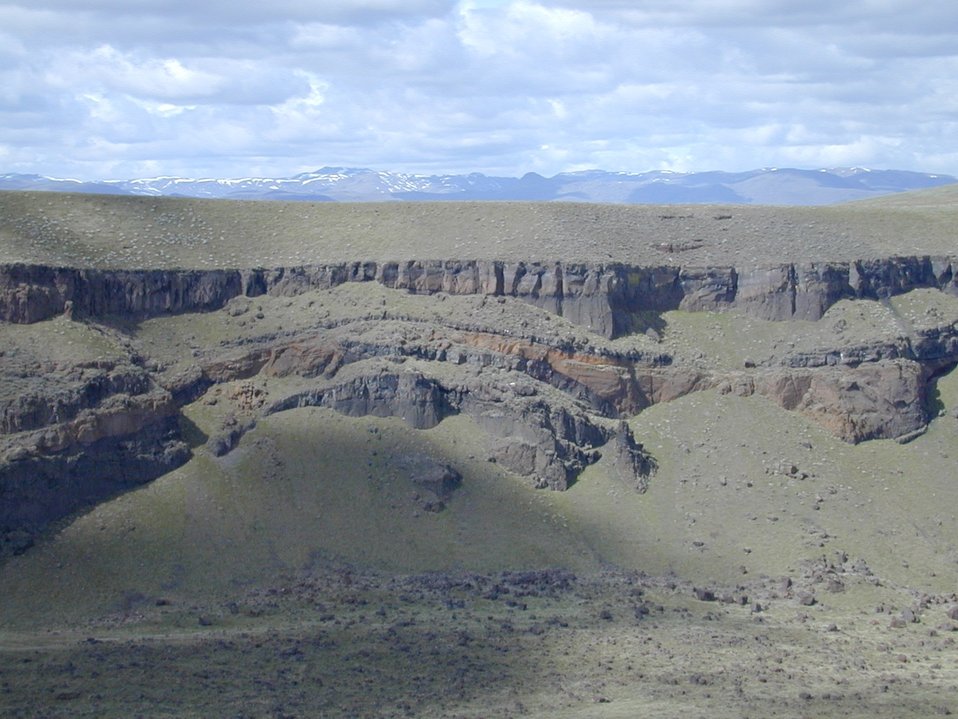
Scenic Snake River Birds of Prey National Conservation Area Lower Snake River District LSRD Snake River Canyon